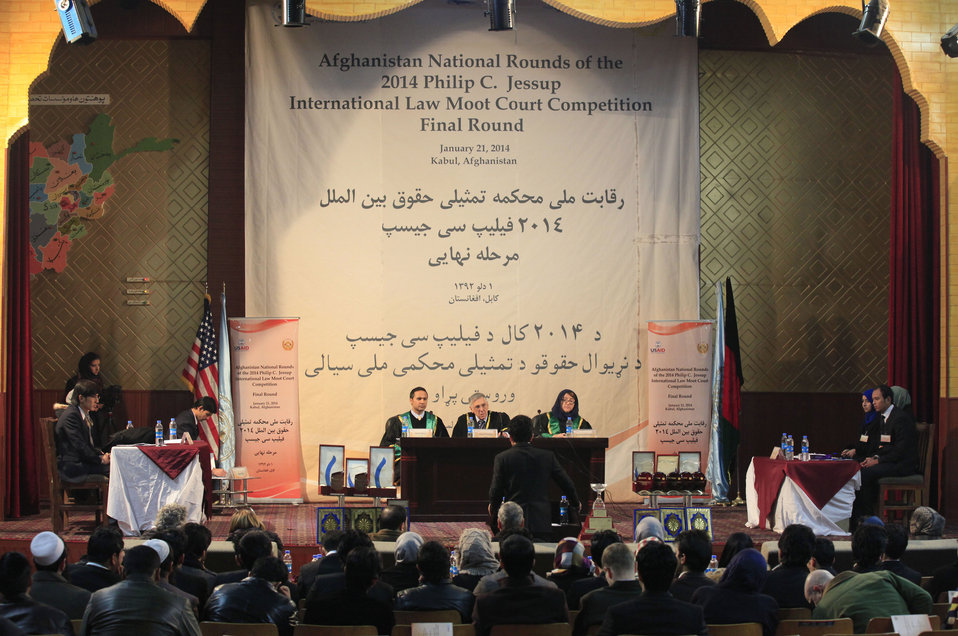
International Law Moot Court Competition 2014